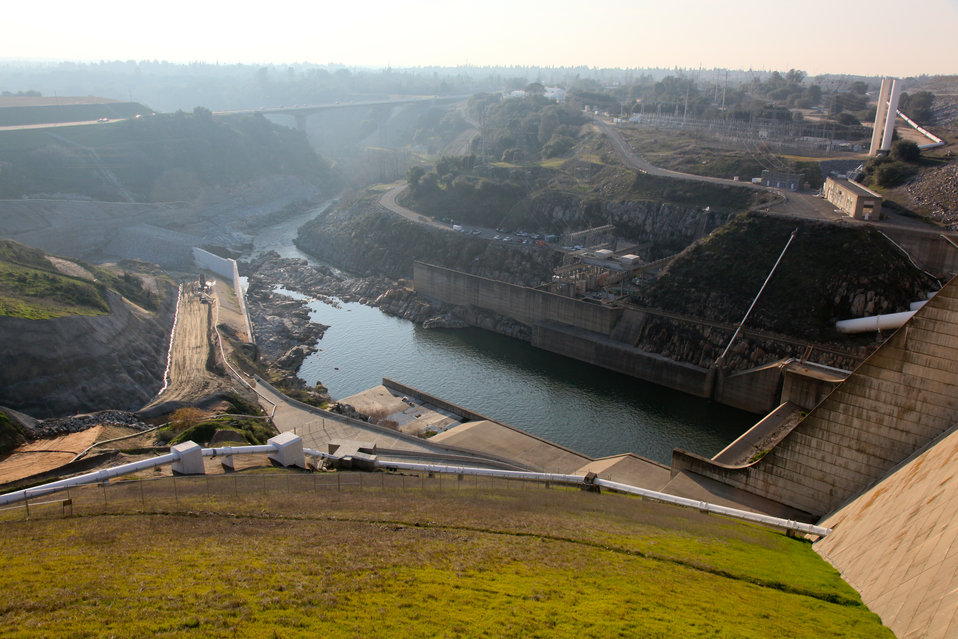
Corps provides tour of Folsom Dam Joint Federal Project to Congresswoman Matsui

FOLSOM, Calif. (Feb. 4, 2011) – A look downstream of the American River from atop of the Folsom Dam here Feb. 3. Rep. Doris O. Matsui toured the dam, including the construction site of the new auxiliary spillway, part of the Folsom Dam Joint Federal Project.
An unprecedented partnership between the Bureau and the Corps, the JFP will reduce the flood risk for the Sacramento metropolitan area and will include a control structure capable of operating in conjunction with existing spillway gates on Folsom Dam to manage flood flows from Folsom Reservoir.